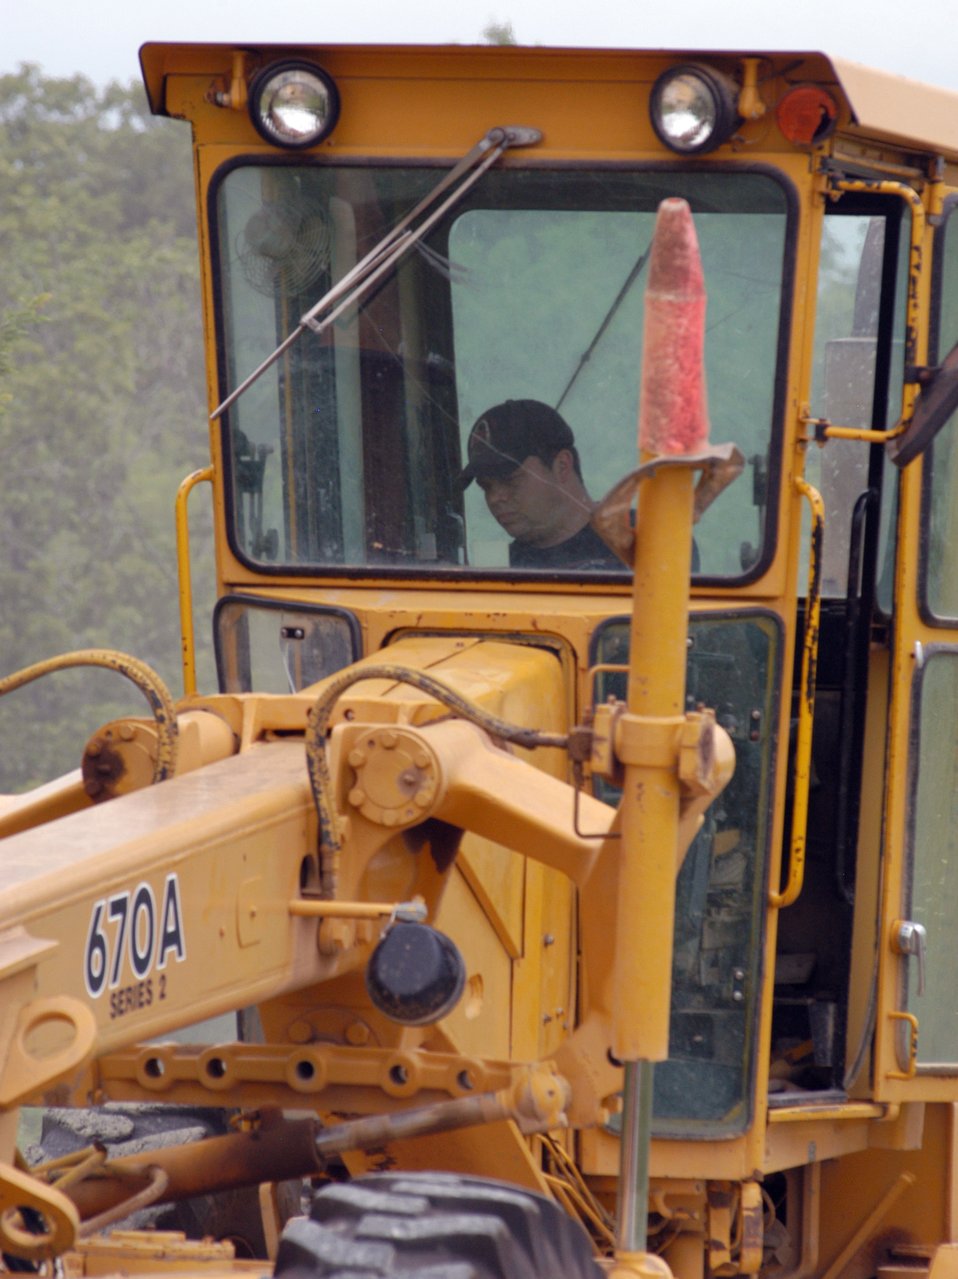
Range keepers help pilots stay combat ready

Tech. Sgt. Jason Woodworth drives a road grader to smooth out one of the many gravel roads at Cannon Range near Fort Leonard Wood, Mo. Sergeant Woodworth is a structural craftsman with the Missouri Air National Guard's 131st Fighter Wing Det. 1 at the range. All 11 of the detachment's people are qualified heavy equipment operators despite coming from diverse career fields. They work as a single team in operating and maintaing this range, which is vital to conducting training for pilots from the Reserve, Guard and active duty.